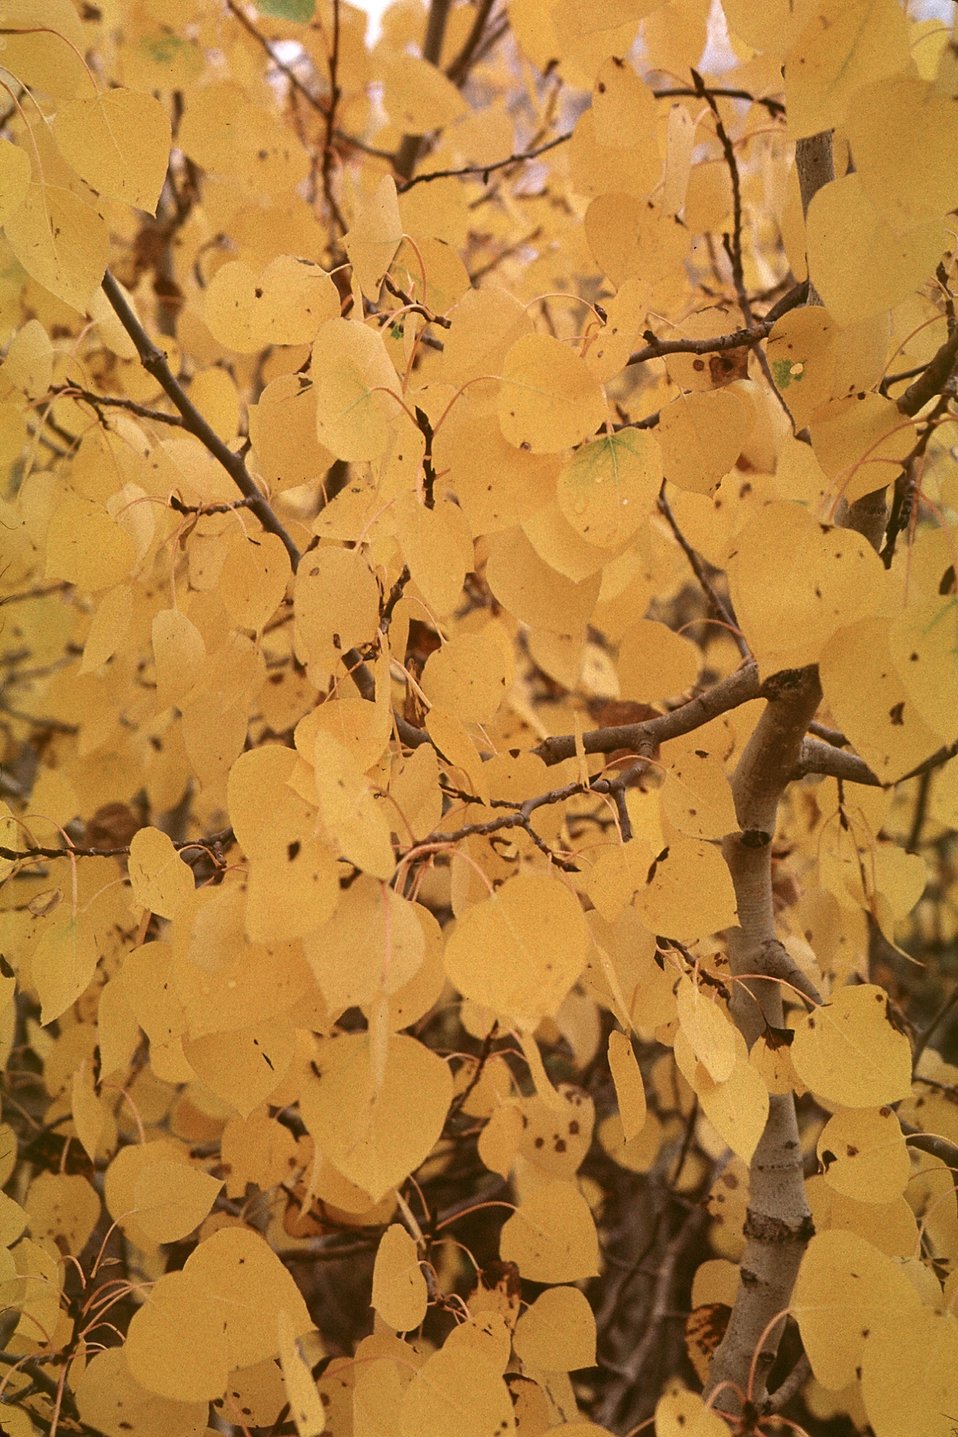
Aspen leaves at Fish Lake, Steen's Mountain.